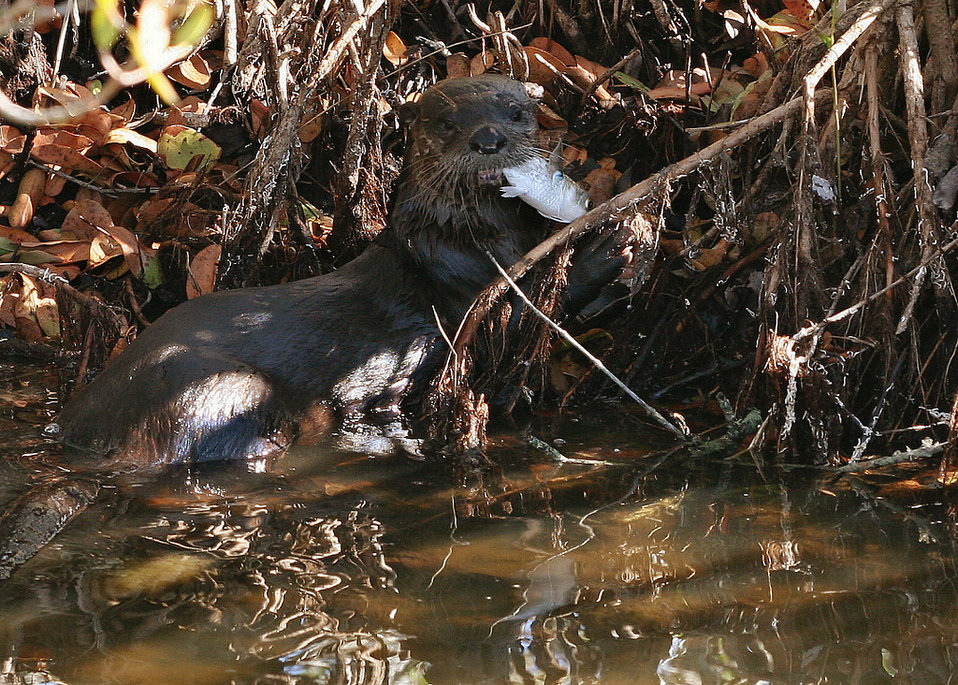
southeastern river otter

Merritt Island National Wildlife Refuge, FL
January 2011